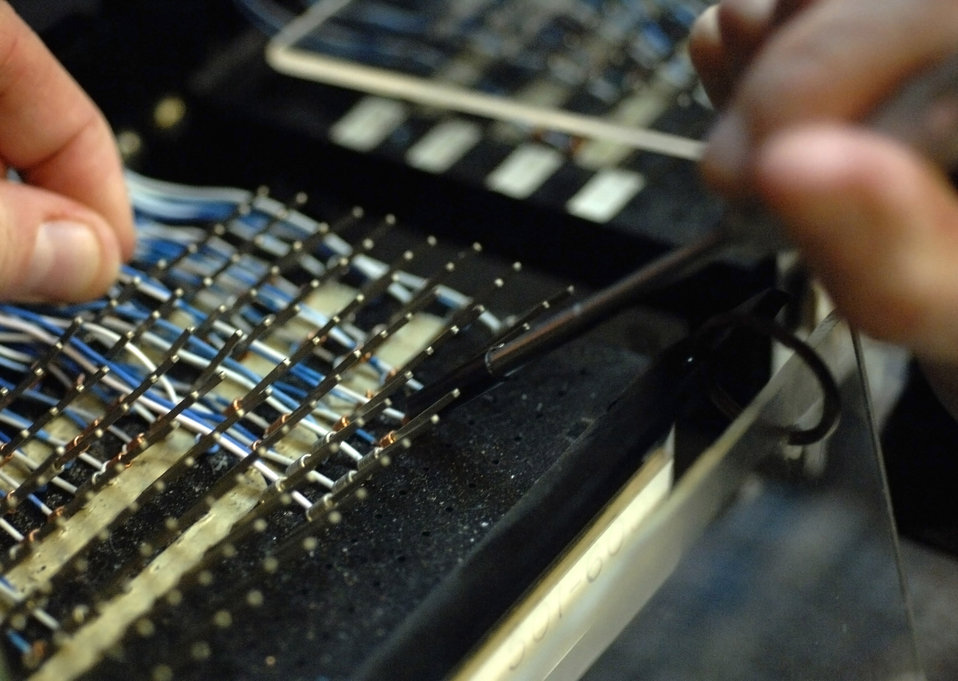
Testing the tele lines

Senior Airman Erin Gilmore, a voice network systems journeyman, uses a buttset to test a newly connected line equipment number Feb. 21 at Langley Air Force Base, Va. A buttset is used to test phone connection and operation of assigned telephone numbers. Airman Gilmore is assigned to the 1st Communications Squadron.